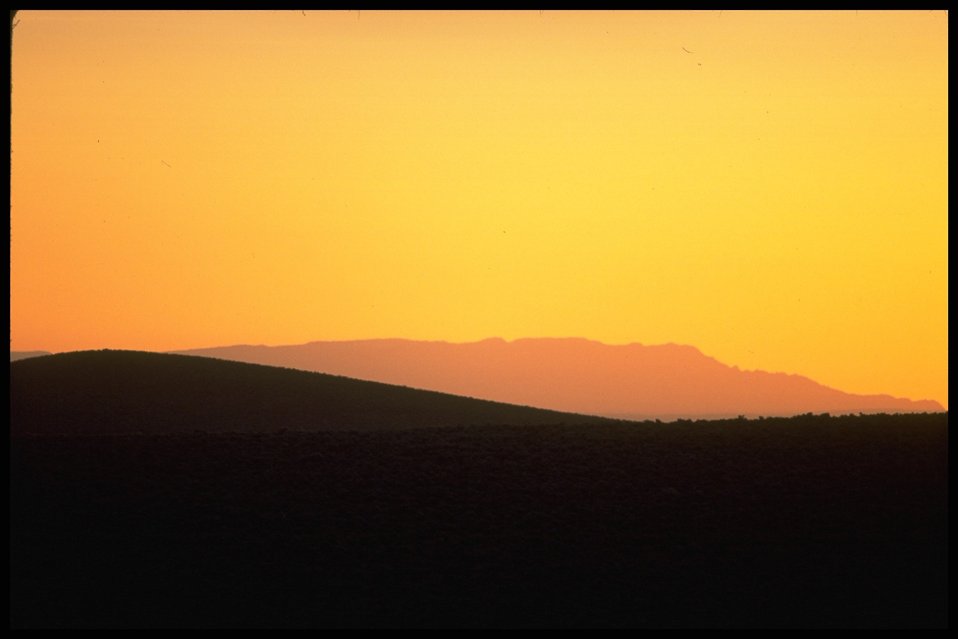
Sunrise at Lakeview District.